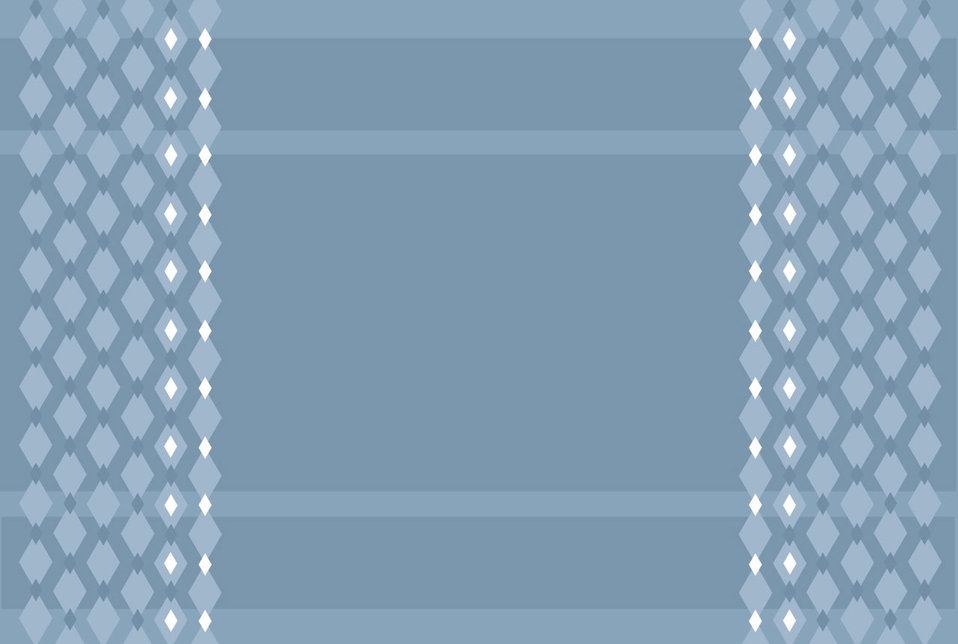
Steel blue background 2

Blue background - geometric pattern.